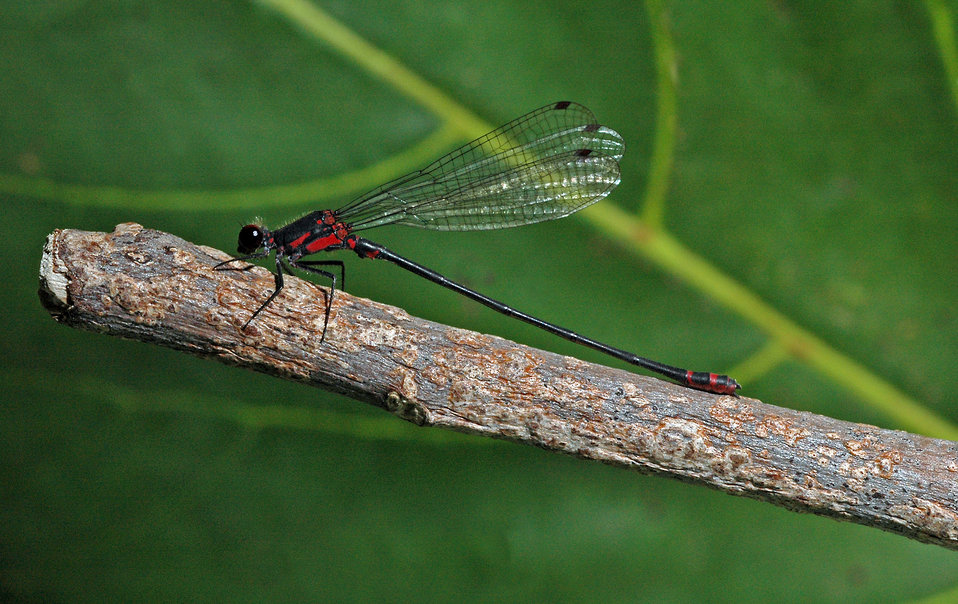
Damselfly - megalagrion pacificum

Endemic to the Hawaiian Islands, populations of the megalagrion pacificum are threatened by habitat loss.